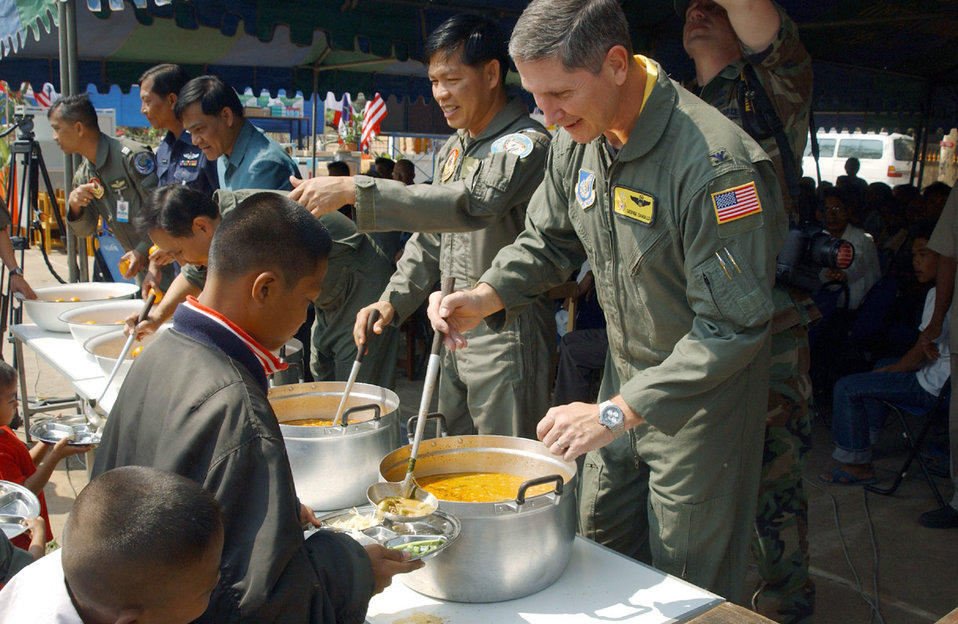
Delivering supplies and lunch

KORAT, Thailand -- Col. George Daniels (right) and Group Capt. Songtam Chokanapitak serve lunch to a group of children during a visit to a local Thai school. Participants from exercise Cope Tiger '04 delivered much-needed supplies to the school. Colonel Daniels is the U.S. Air Force exercise director and Captain Chokanapitak is an airman with the Royal Thai air force.